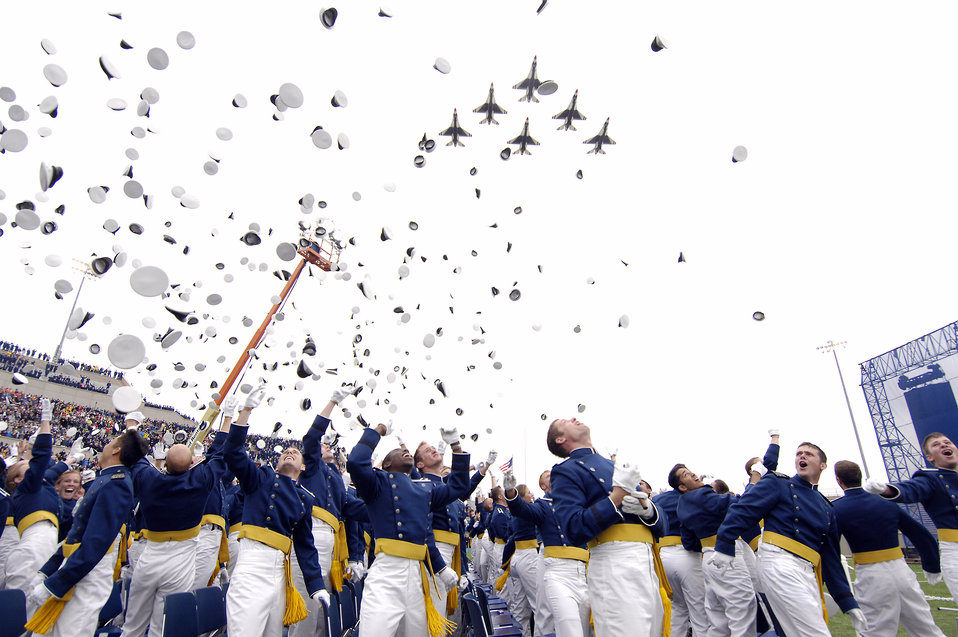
I did it, I'm a lieutenant!

The 1,012 members of the U.S. Air Force Academy's class of 2008 toss their hats in the air at the end of graduation ceremonies at Falcon Stadium in Colorado. President George W. Bush was the commencement speaker.